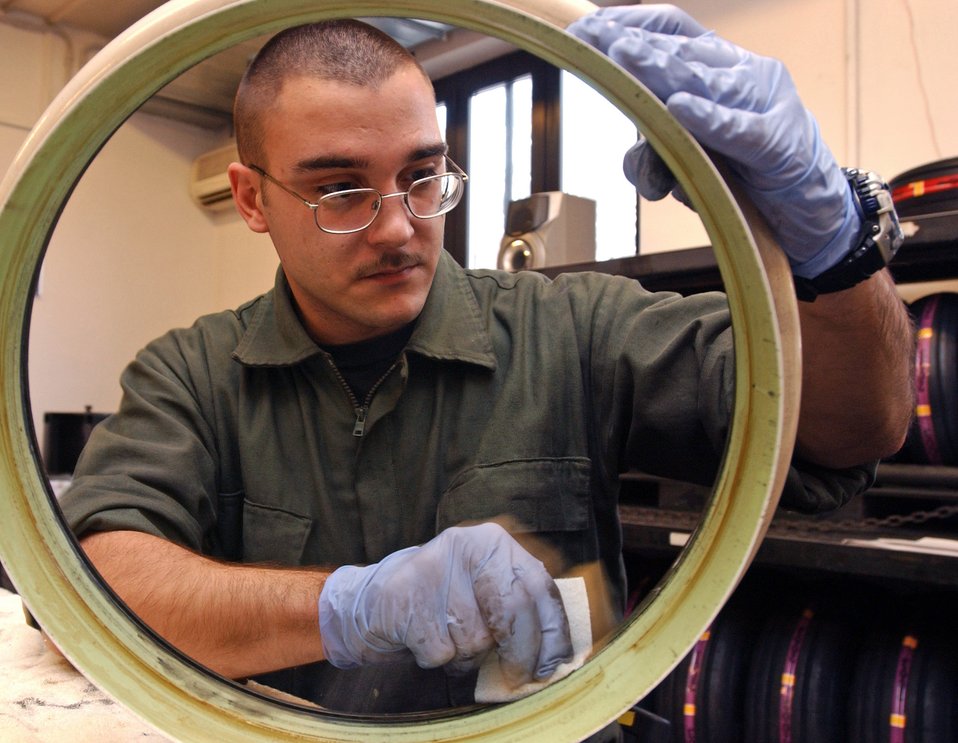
Big wheels keep on turning

AVIANO AIR BASE, Italy -- Senior Airman Scott Ward cleans and inspects the inner wheel base assembly of an F-16 Fighting Falcon main landing gear wheel here Jan. 28. Airman Ward is a wheel and tire technician assigned to the 31st Maintenance Squadron.